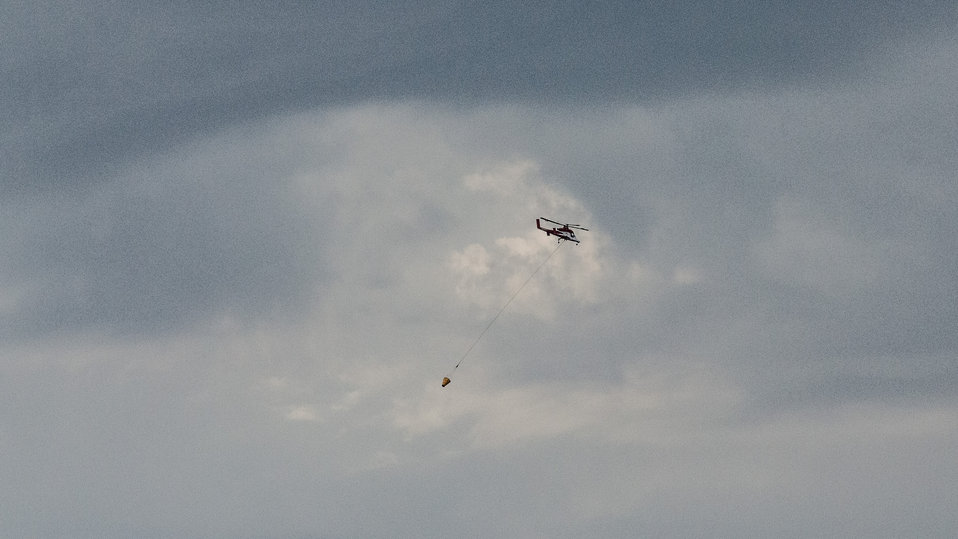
A Kaman K-MAX helicopter, with two counter-rotating intermeshing rotors (synchropter), returns to base or “dip point” to reload the flexible bucket (cabled below it) with water for an aerial drop where needed during the Big Windy Complex Wildlands Fire, 15 miles west of Interstate-5 and East Northeast of Galice, Oregon, with the Incident Command Post (ICP) in Merlin, OR on Thursday, Aug 8, 2013. This type of helicopter is designed for lifting external loads of more than 6,000 pounds. There is no tail rotor, and its design contributes to a natural hover characteristic. Reloading the bucket with water does not require the aircraft to land, saving time and fuel.